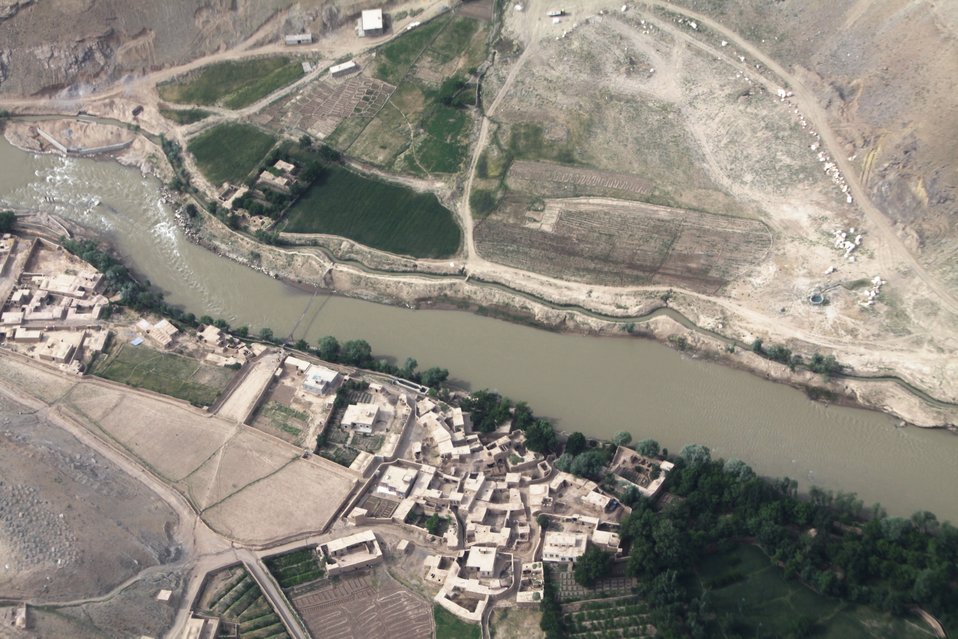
100525 Hirat Marble Conference 022